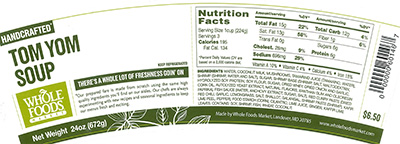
RECALLED – Tom Yom Soup

February 19, 2014 – Product Recall – Whole Foods Market Mid-Atlantic Region Recalls Tom Yom Soup Due to Undeclared Milk.